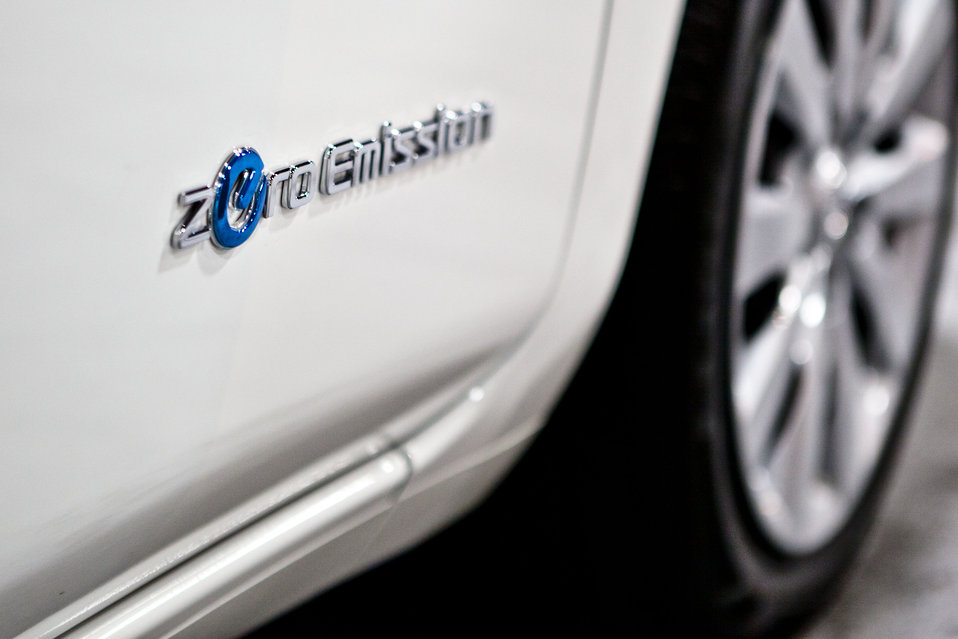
The new Nissan Leaf is being built at the company's Smyrna, Tennessee, Vehicle Assembly Plant -- helping to cut the price of its electric vehicle.